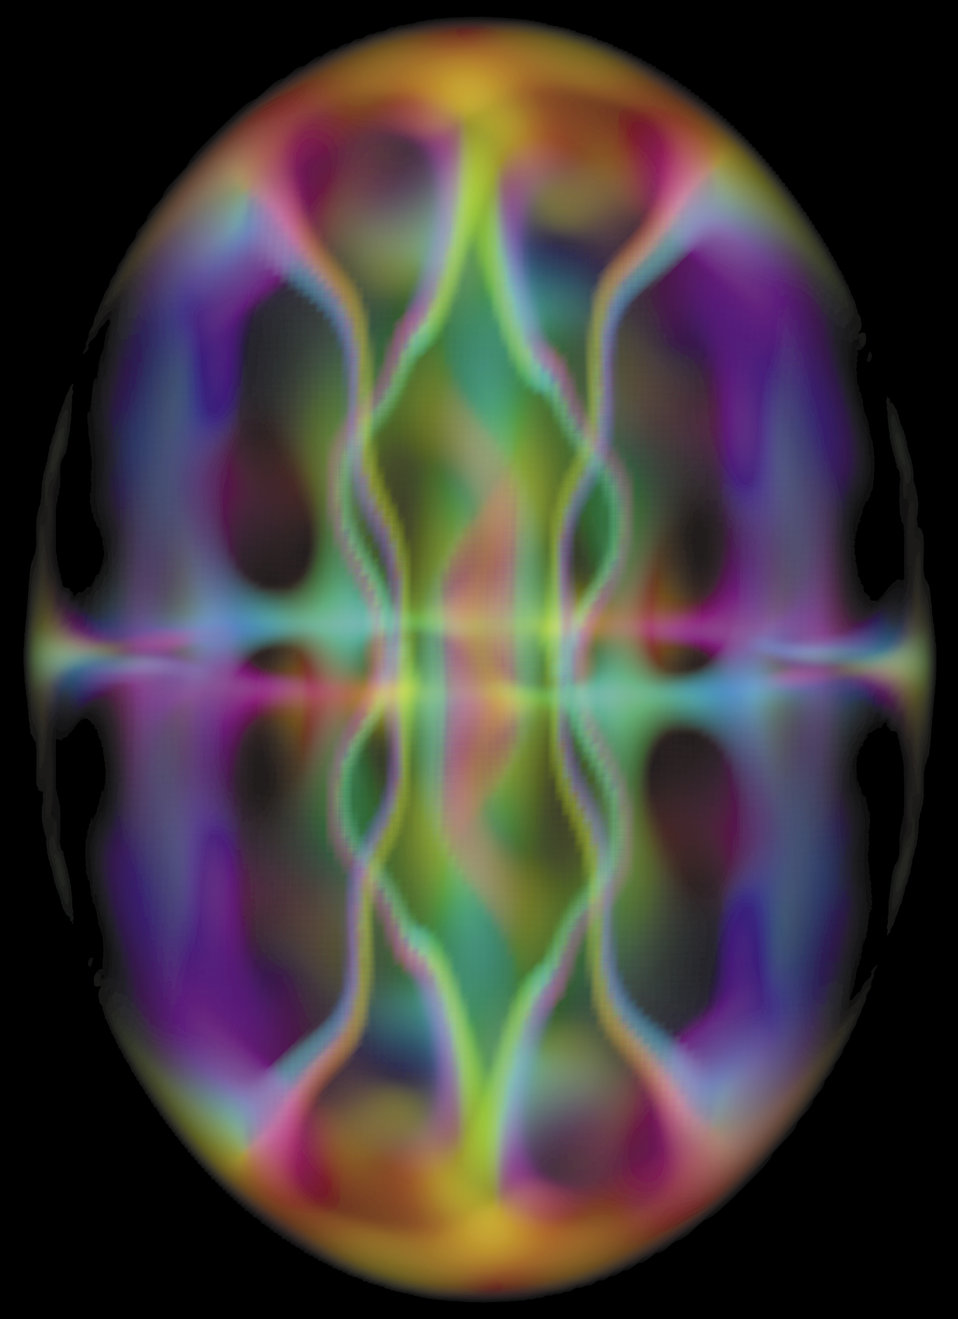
Bose-Einstein Condensate

Computer simulation showing tornado-like vortices forming within a spinning Bose-Einstein condensate. BEC's are a new state of matter in which a collection of atoms behaves like one uniform 'superatom.' This NIST simulation helped confirm that BEC's are superfluids - a kind of liquid/gas that flows without friction.